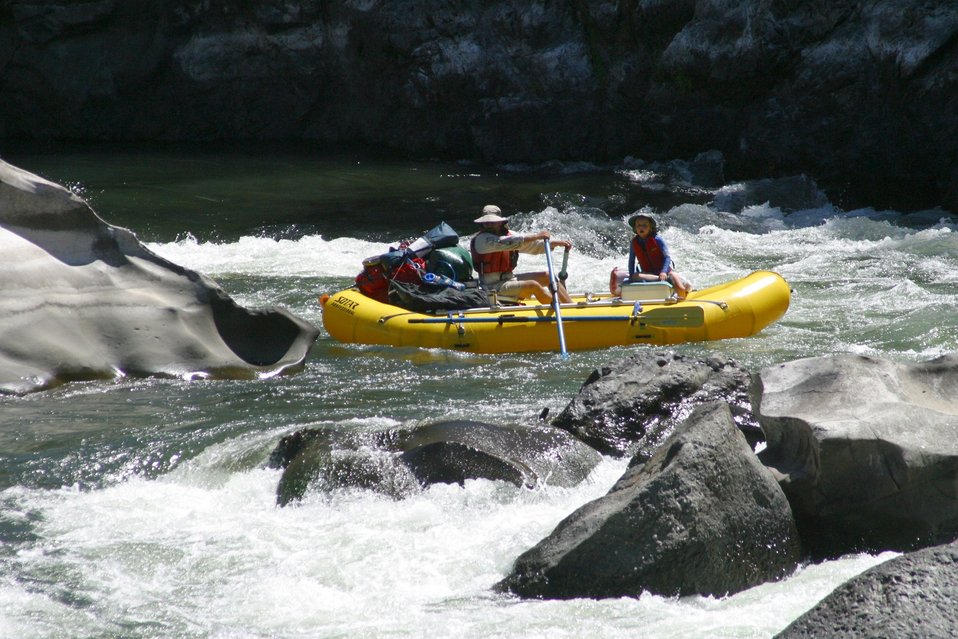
Boaters negotiate Blossom Rapids.